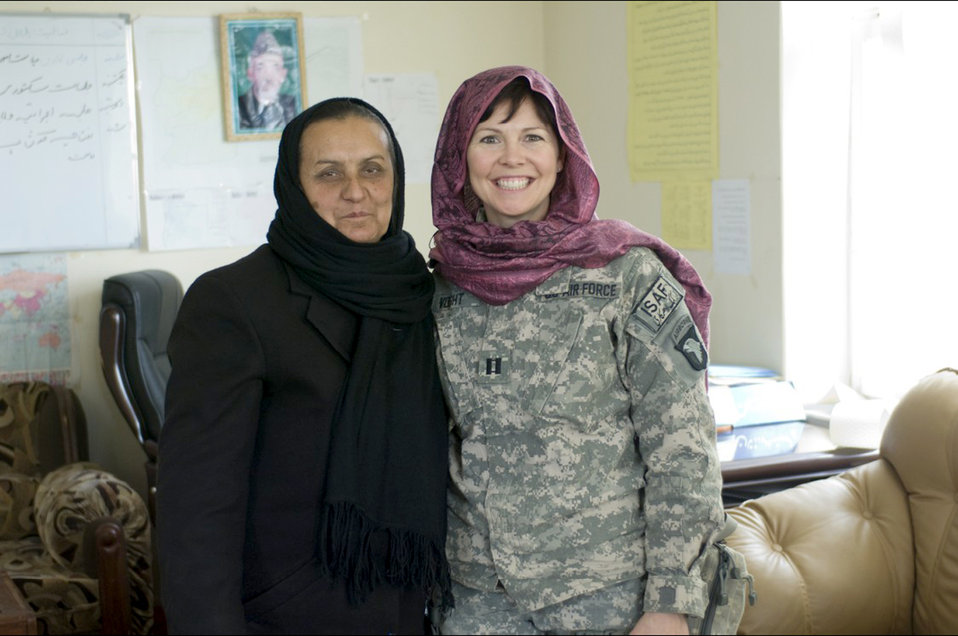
PRT Kapisa

Capt. Ann Voght meets with Ms. Kohistani, the director of the provincial department of women's affairs in Mahmud-E Raqi, Afghanistan. Captain Voght is a medical officer assigned to Provincial Reconstruction Team Kapisa.